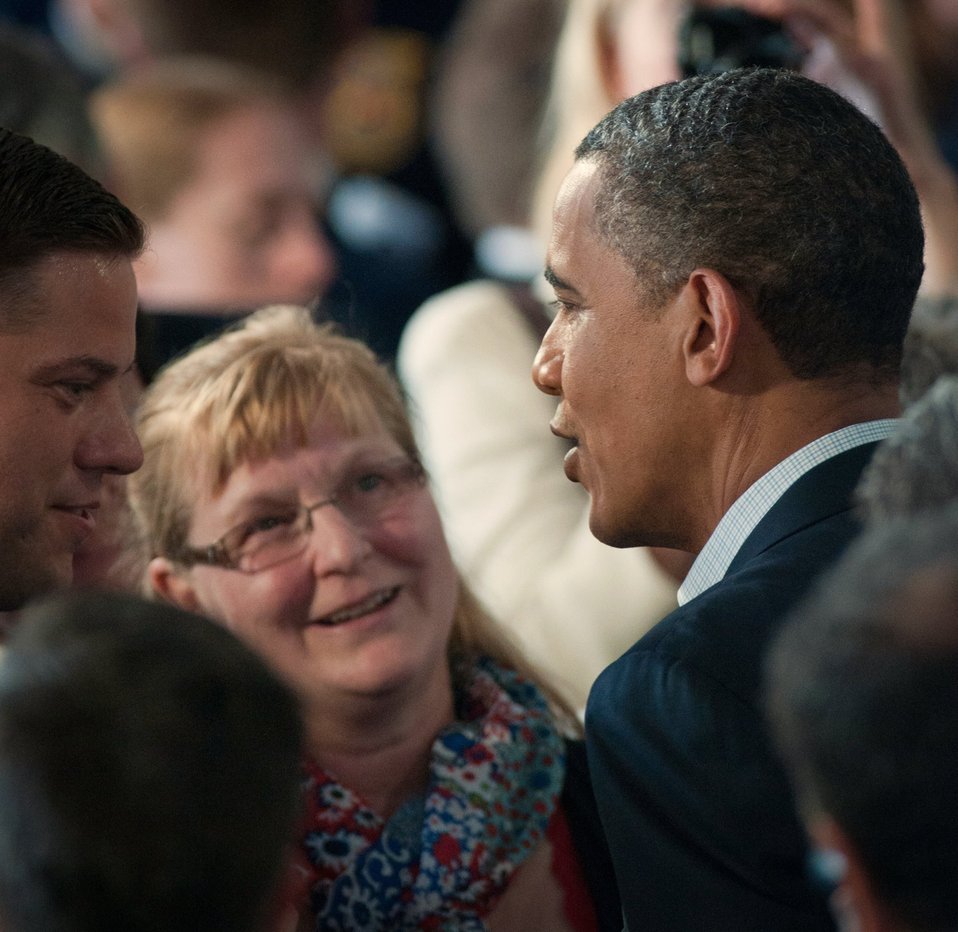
President Barack Obama meets with the audience at the Northeast Iowa Community College, for a White House Rural Economic Forum on Tuesday, August 16, 2011. The President’s visit will focus on agriculture’s contribution to the national economy, and how to create more jobs in rural America.